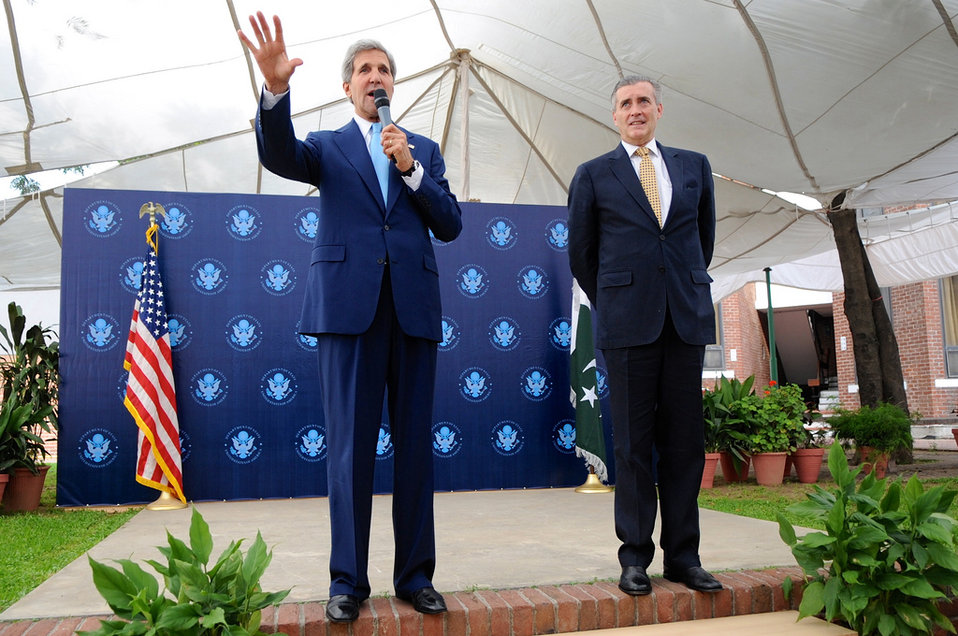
Secretary Kerry and Ambassador Olson Greet Embassy Islamabad Staff

U.S. Secretary of State John Kerry and U.S. Ambassador to Pakistan Richard Olson greet staffers at the U.S. Embassy in Islamabad, Pakistan, on August 1, 2013.